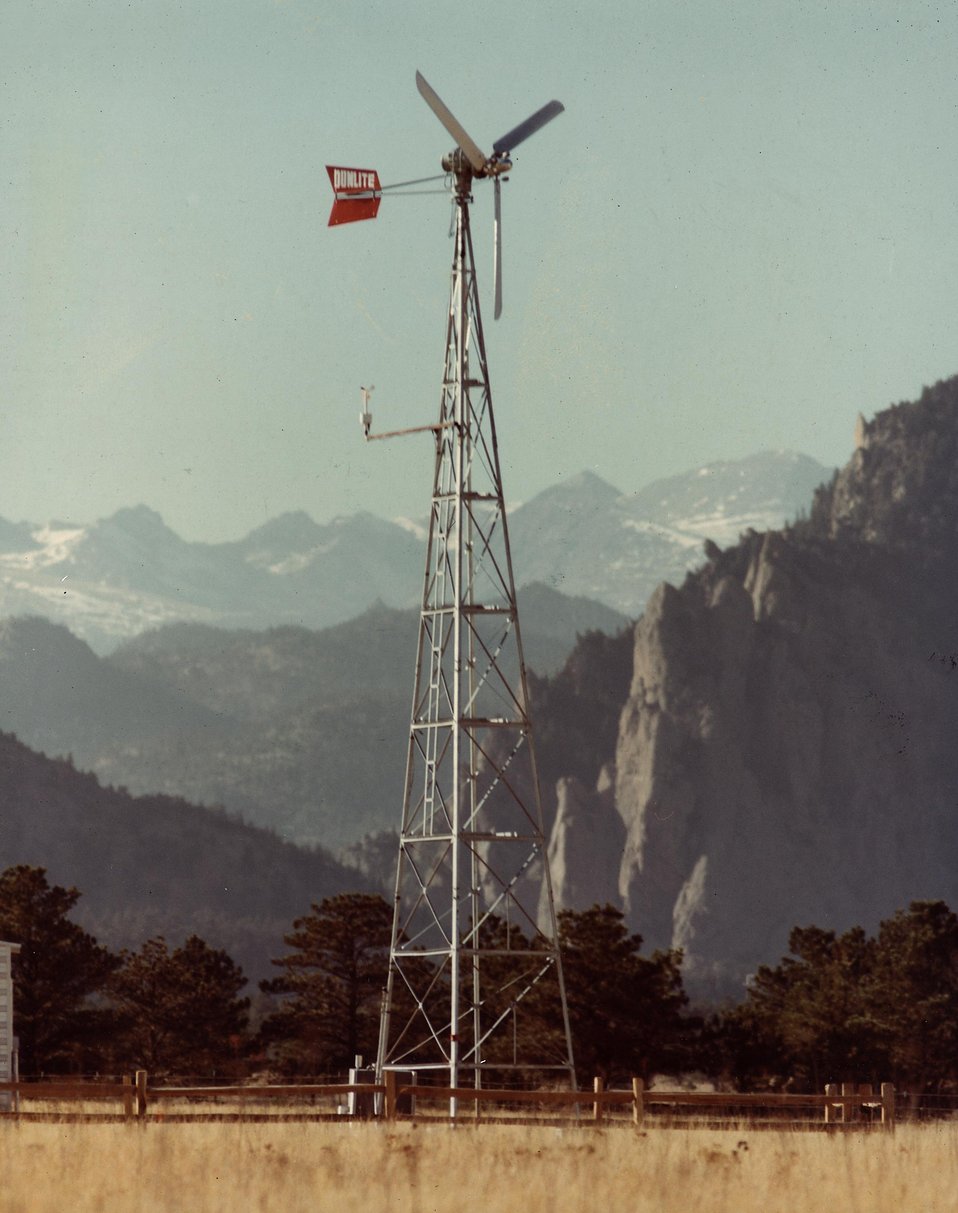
Dunlite 2KW. c. undated